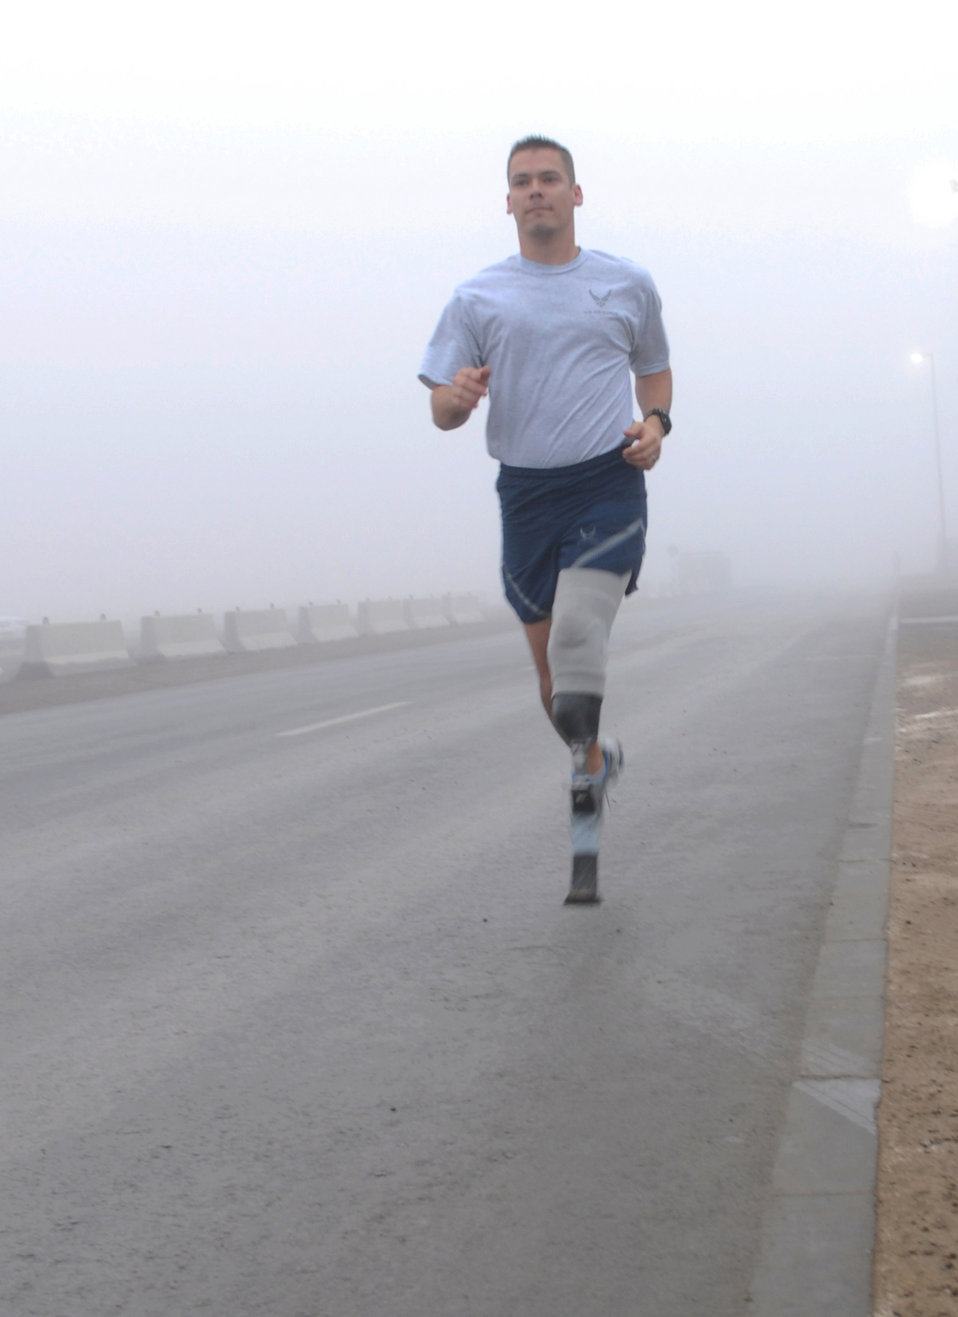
Air Force amputee returns to Southwest Asia, spends holidays in AOR

SOUTHWEST ASIA -- Tech. Sgt. Christopher Ramakka, flight chief from the 380th Expeditionary Civil Engineer Explosive Ordnance Flight, goes for an early-morning run here Dec. 24. The Richland, Wash., native is serving his debut deployment after losing his lower left leg when he stepped on a mine in Afghanistan three years ago. He also lost the tips of two fingers and suffered further damage to his hands and right leg. Sergeant Ramakka is depoyed from Lackland Air Force Base, Texas.